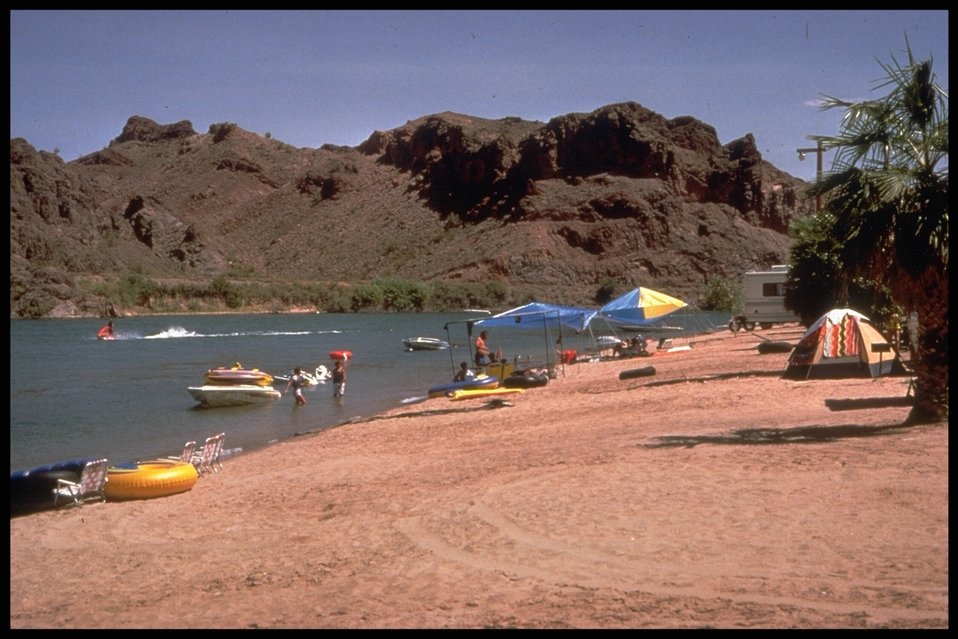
Shorelines with developed areas, like this one in yuma, provide many recreational opportunities for the water enthusiast.